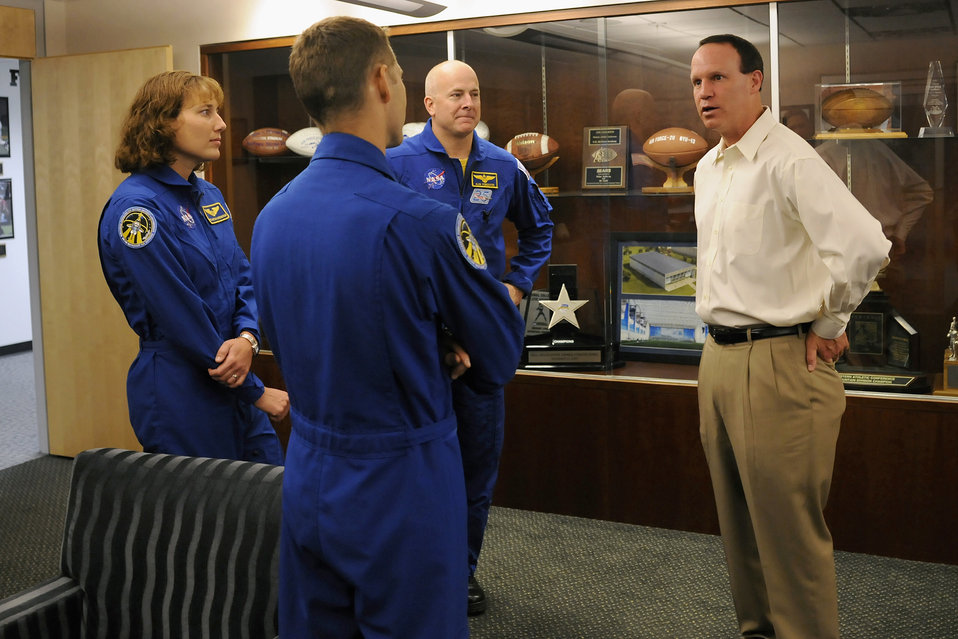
Calhoun named Paterno Award Finalist

(From left) Dorothy Metcalf-Lindenberger, Col. Jim Dutton and Navy Capt. Alan Poindexter talk with Air Force football head coach Troy Calhoun during a